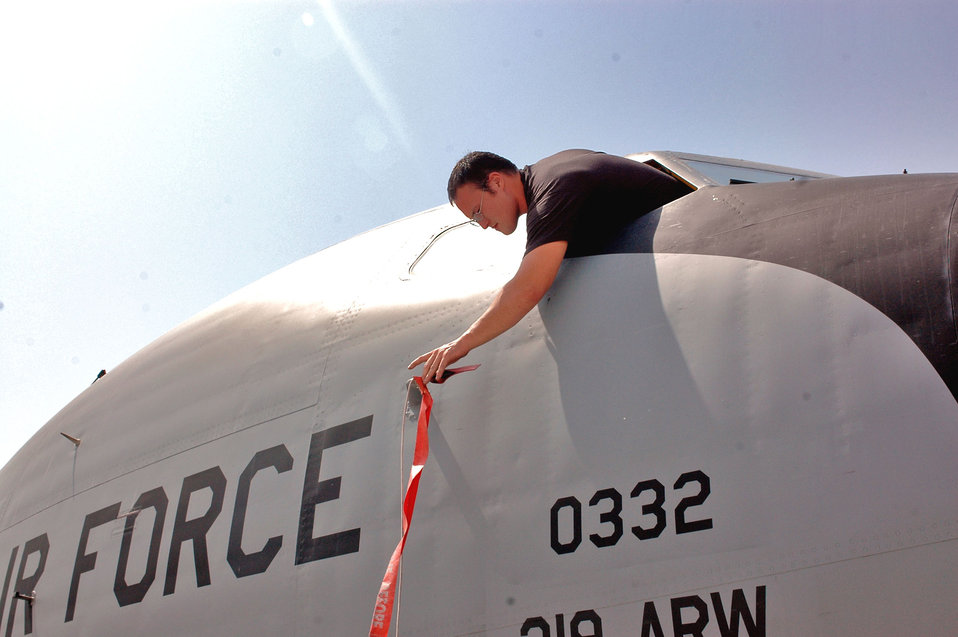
Deployed unit turns fuel into freedom

Senior Airman Mike McGovern places a cover on an air data probe of a KC-135 Stratotanker in Southwest Asia. The cover prevents foreign objects from damaging and plugging the probe so pilots receive accurate information. Airman McGovern is deployed to the 340th Aircraft Maintenance Unit from Grand Forks Air Force Base, N.D.